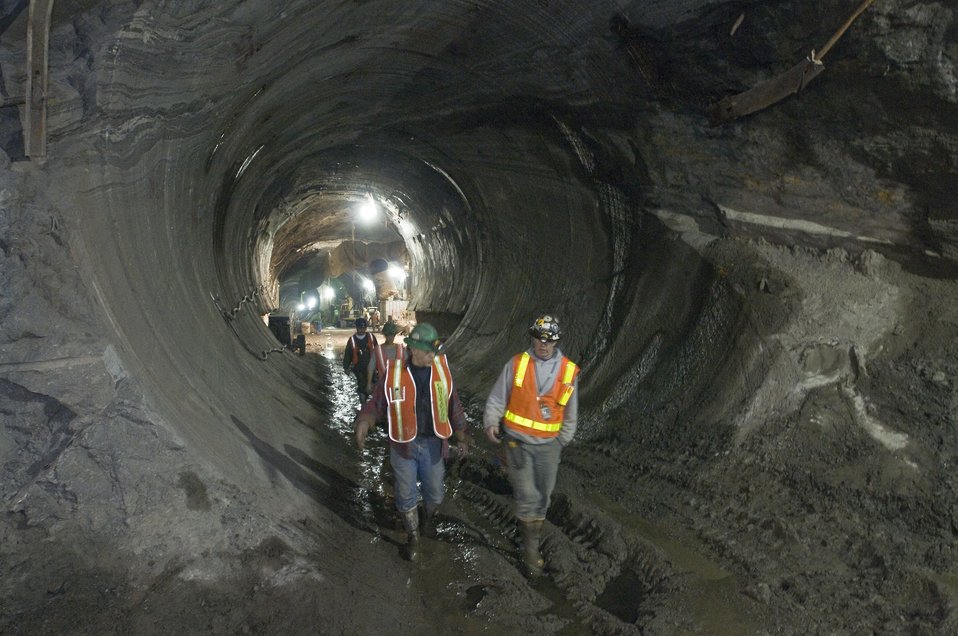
sandhogs continuing work on the LIRR station cavern below Grand Central Terminal and approx 100 feet below street level.

The East Side Access project will connect the Long Island Rail Road’s (LIRR) Main and Port Washington lines in Queens to a new LIRR terminal beneath Grand Central Terminal in Manhattan. The new connection will increase the LIRR’s capacity into Manhattan, and dramatically shorten travel time for Long Island and eastern Queens commuters traveling to the east side of Manhattan.